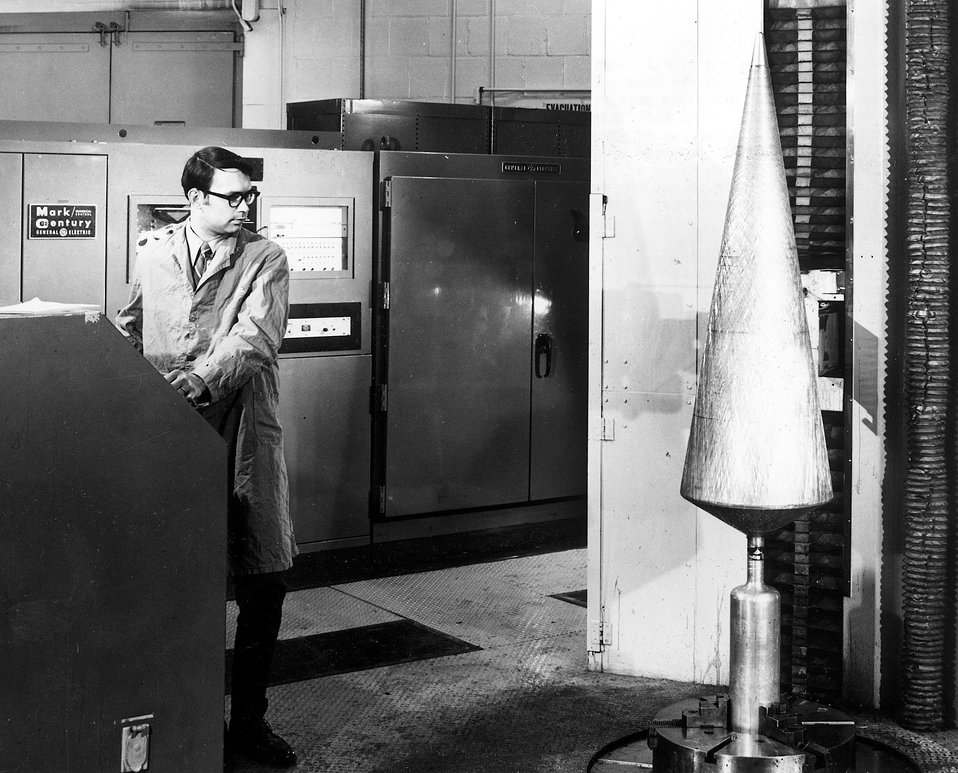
WINDING MACHINE...This numerically controlled filament winding machine is used at the Atomic Energy Commission's Oak Ridge Y-12 Plant (Tenn.) as part of a research effort to develop lightweight materials with high structural strength. Filaments of glass, metal, or carbon are wrapped around mandrels up to eight feet in length and four feet in diameter. Circa 1972.